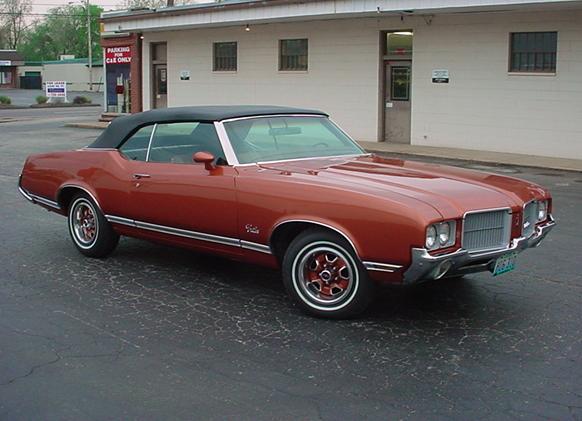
I, the creator of this work, hereby release it into the public domain. This applies worldwide. In case this is not legally possible, I grant any entity the right to use this work for any purpose, without any conditions, unless such conditions are required by law.